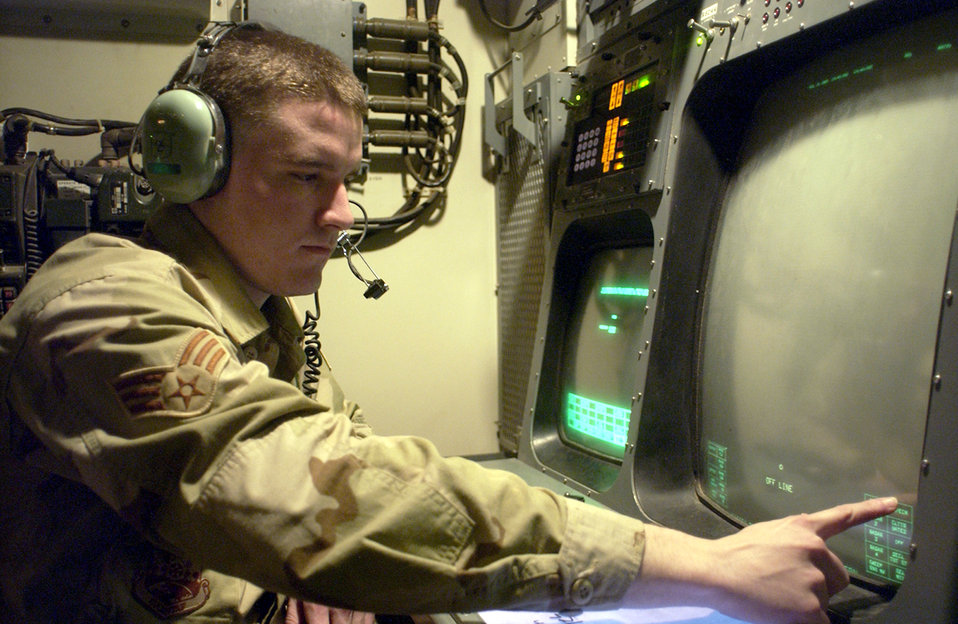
Airmen keep Iraqi airways clear

BALAD AIR BASE, Iraq -- Senior Airman William Swanson monitors Iraqi theater operations from an operator console. He is a 727th Expeditionary Air Control Squadron surveillance technician.